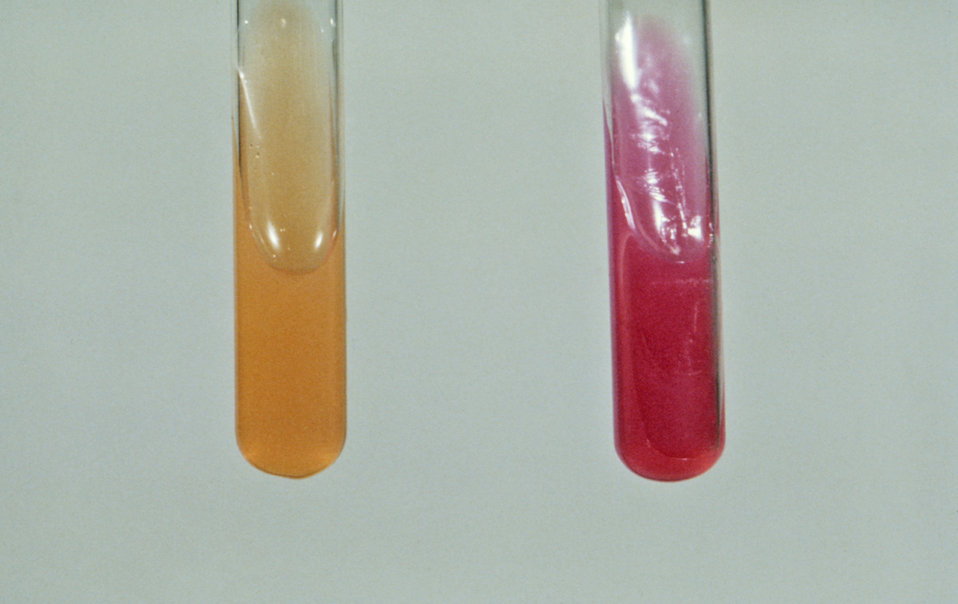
This urease test, based on the process involving the hydrolysis of urea, was performed to help identify the Gram-negative enteric bacterium Yersinia enterocolitica.